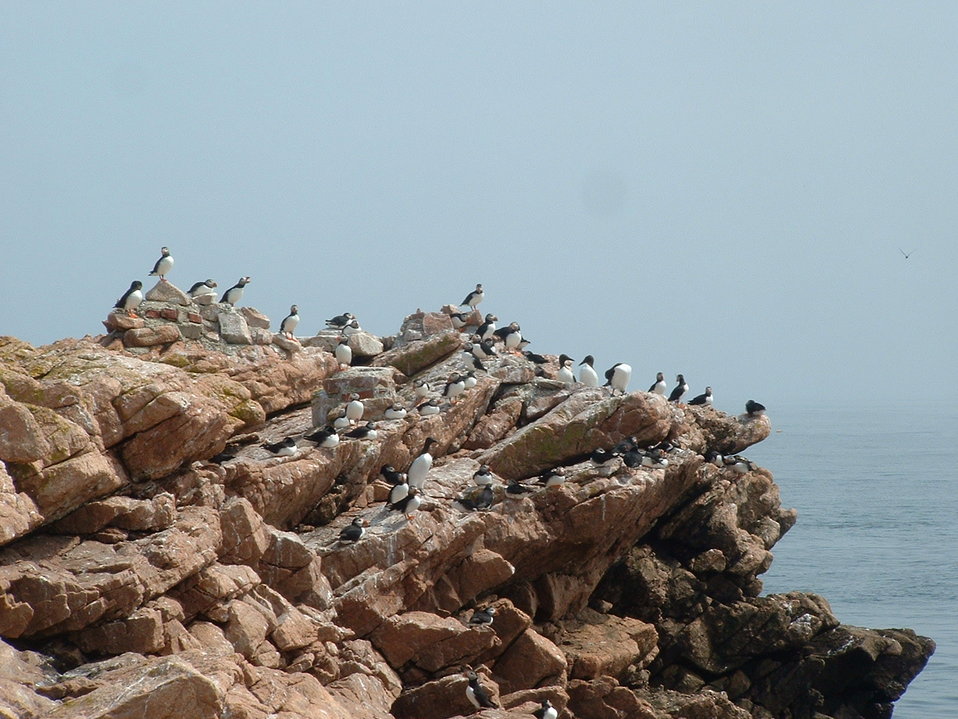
Atlantic puffins and razorbills at Maine Coastal Island National Wildlife Refuge